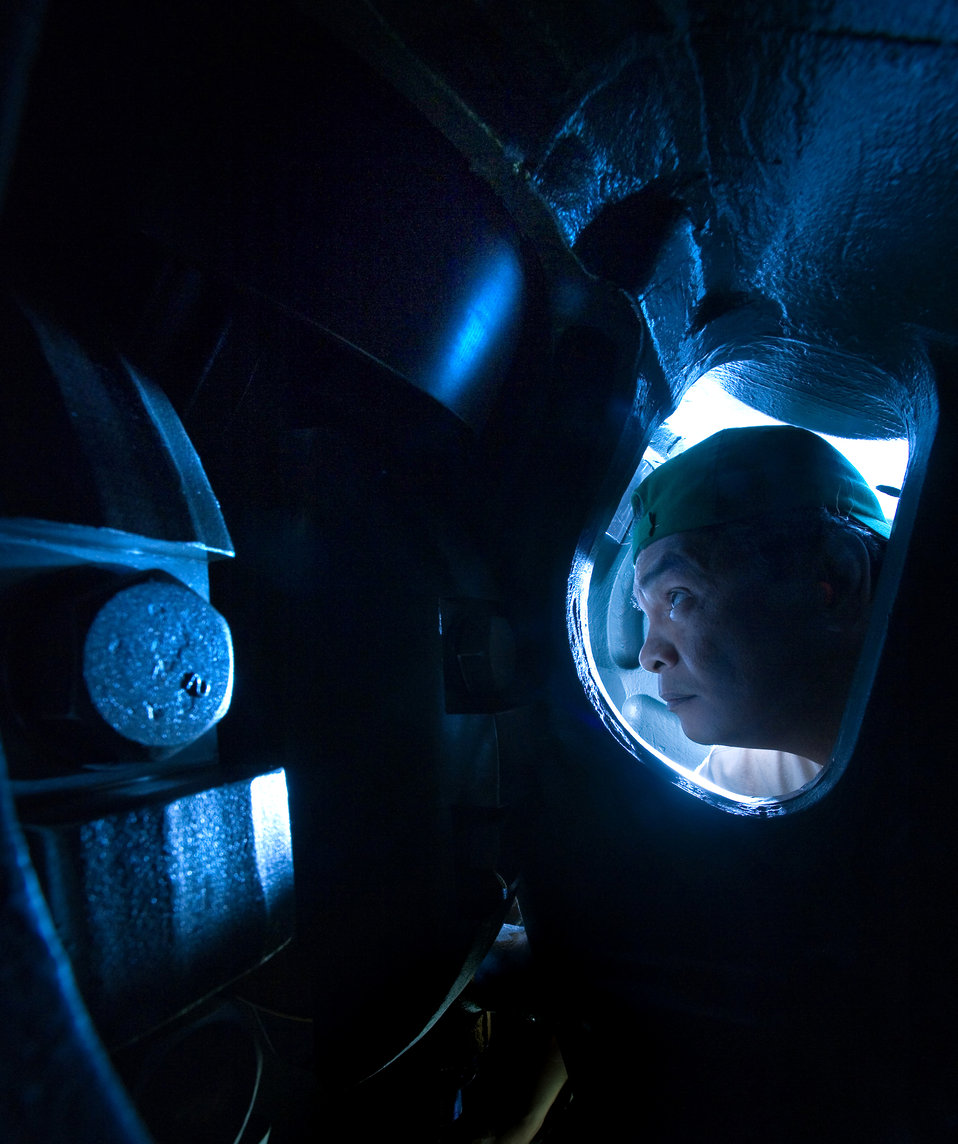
Ascension Island Green Way

Mr. Damien Cuello with his head and shoulder inside the cleaned crankcase of a V-12 Mitsubishi S12U turbocharged diesel engine he can better see in the piston, connecting rod, and counterweight assembly he has to work on at the power production facility of the 45th Operations Group, Detachment 2, at Ascension Auxiliary Airfield (AAF), South Atlantic Ocean on June 27, 2009. The bore and stroke of this engine is 10 1/4 inch X 9 1/2 inch. Each piston and connecting rod assembly weighs 175 pounds. They are connected to a 3,500 pound crankshaft. Compared to automobiles, this is many times bigger. The engine drives a 1900kW generator that supplies power to the electrical grid for the airfield, Space Command sites and facilities, and a royal air force airfield facility on the island. Mr. Cuello is a Computer Sciences Raytheon contract associate in charge of maintenance for 6 wind turbines and 5 diesel generators. Wind turbines, that also feed the electrical grid, were designed to work in parallel with the diesel generators to form a hybrid power production solution. The wind turbines lower the load on the engines, extend their life cycle and lower emissions. Ascension AAF's award winning economical self-sufficiency solutions also includes drinking water production and waste water treatment. The mission of Det. 2 is support of eastern range space launches by collecting and disseminating radar, telemetry and tracking data. Ascension island is 35 square miles in a remote location midway between Brazil and Angola. The nearest country is Liberia - 1000 miles away.